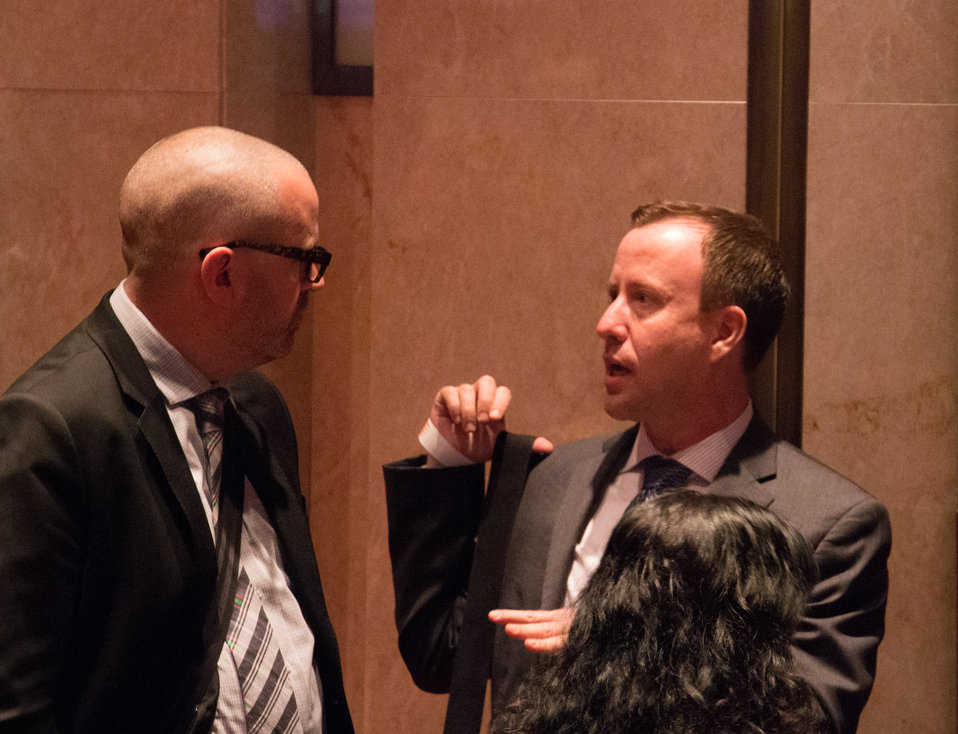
VHAP Launch (369 of 511)